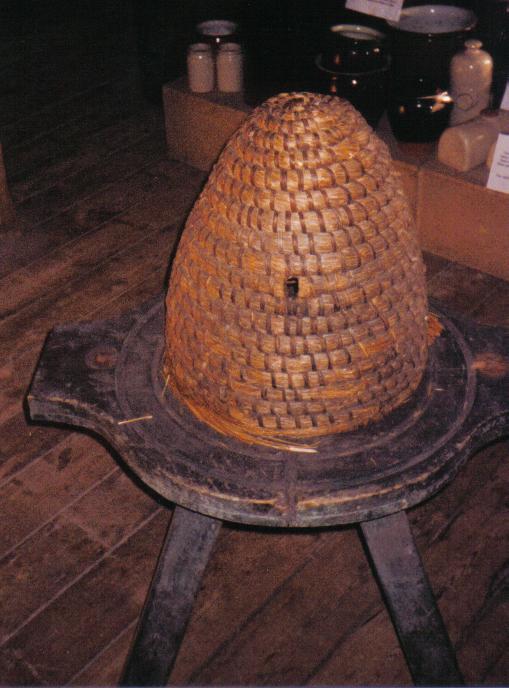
A bee skep at Dalgarven Mill. The base is part of an old cheese press